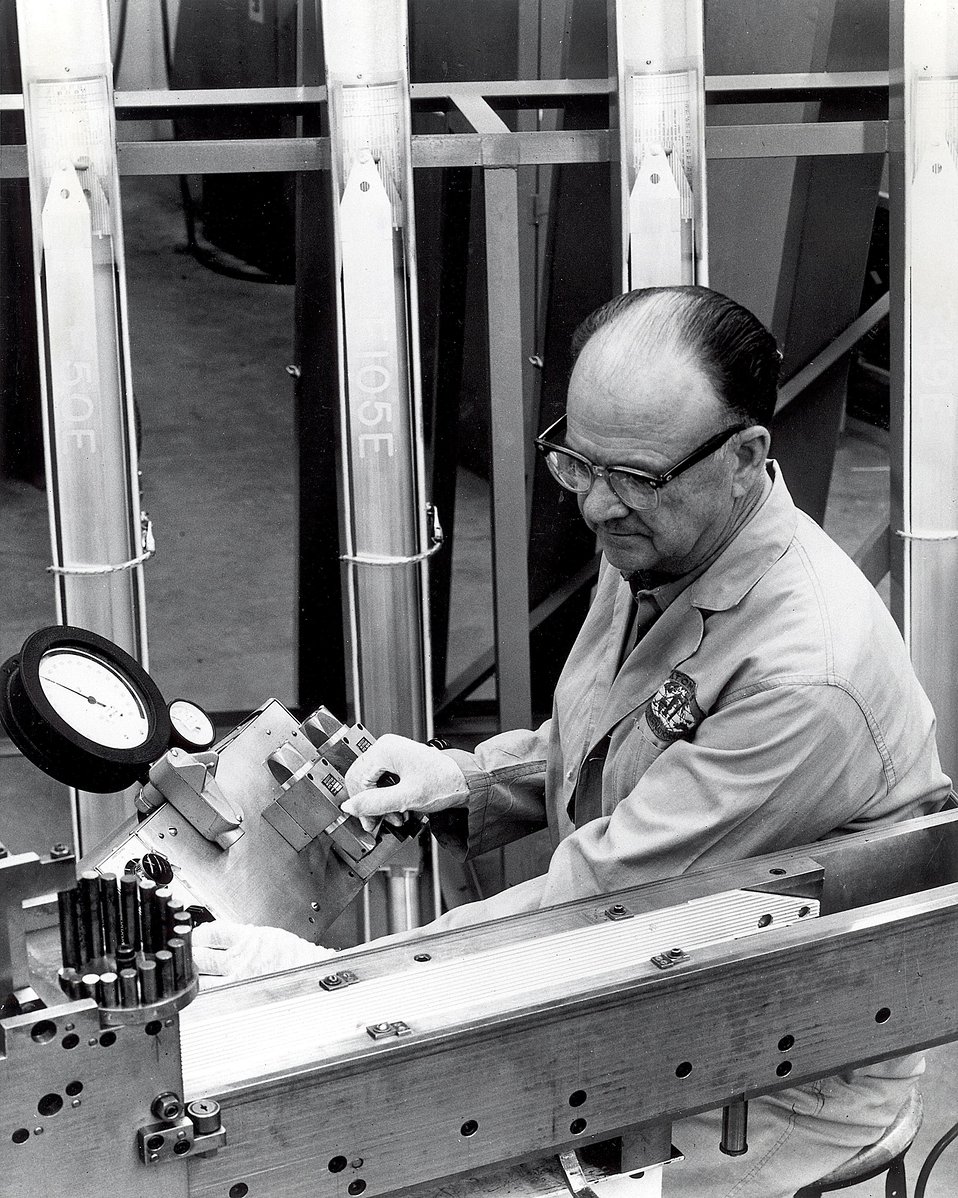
Final assembly is completed on one of 45 atomic reactors fuel elements.